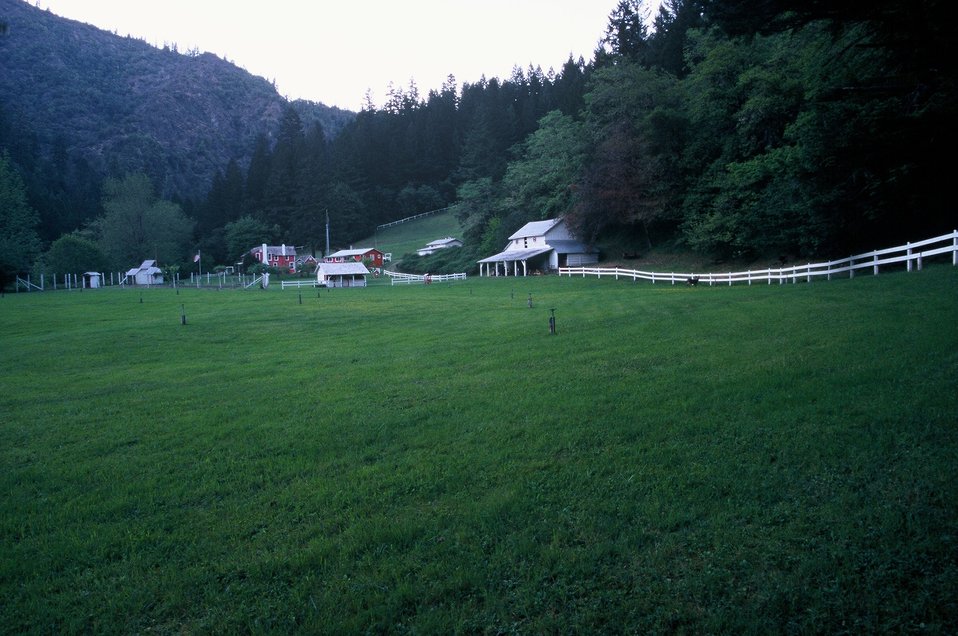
Wild section of the Rogue River from Grave Creek to Foster Bar May 19 to May 22.